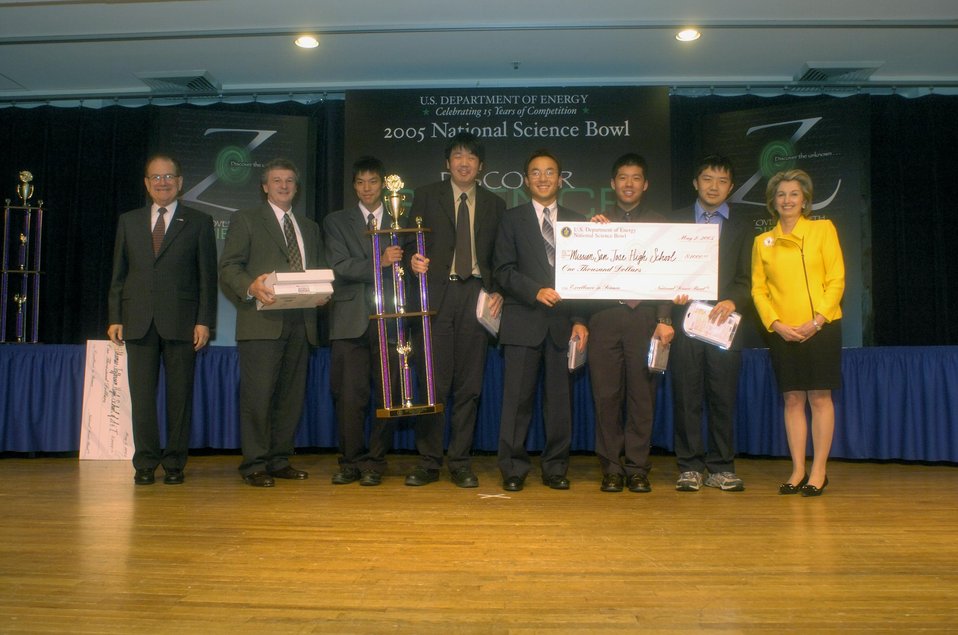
THE 2005 NATIONAL SCIENCE BOWL SECOND PLACE WINNING TEAM, MISSION SAN JOSE HIGH SCHOOL, FREMONT, CA, HOLDING THEIR TROPHY AND $1,000.00 CHECK FOR THEIR SCHOOL.

WITH THE TEAM ON THE LEFT IS RAYMOND ORBACH, DIRECTOR, DOE OFFICE OF SCIENCE, AND THE RIGHT IS MRS. SAMUEL BODMAN, WIFE OF THE SECRETARY OF ENERGY. DOE CREATED THE NATIONAL SCIENCE BOWL IN 1991 TO ENCOURAGE HIGH SCHOOL STUDENTS TO EXCEL IN MATH AND SCIENCE AND TO PURSUE CAREERS IN THESE FIELDS. OVER 300 SENIOR HIGH SCHOOL STUDENTS, CHAMPIONS FROM 63 REGIONAL COMPETITIONS ATTENDED THE 2005 EVENT. THIS TEAM ALSO WON A TWO WEEK TRIP TO AUSTRALIA TO ATTEND THE INTERNATIONAL SCIENCE SCHOOL.